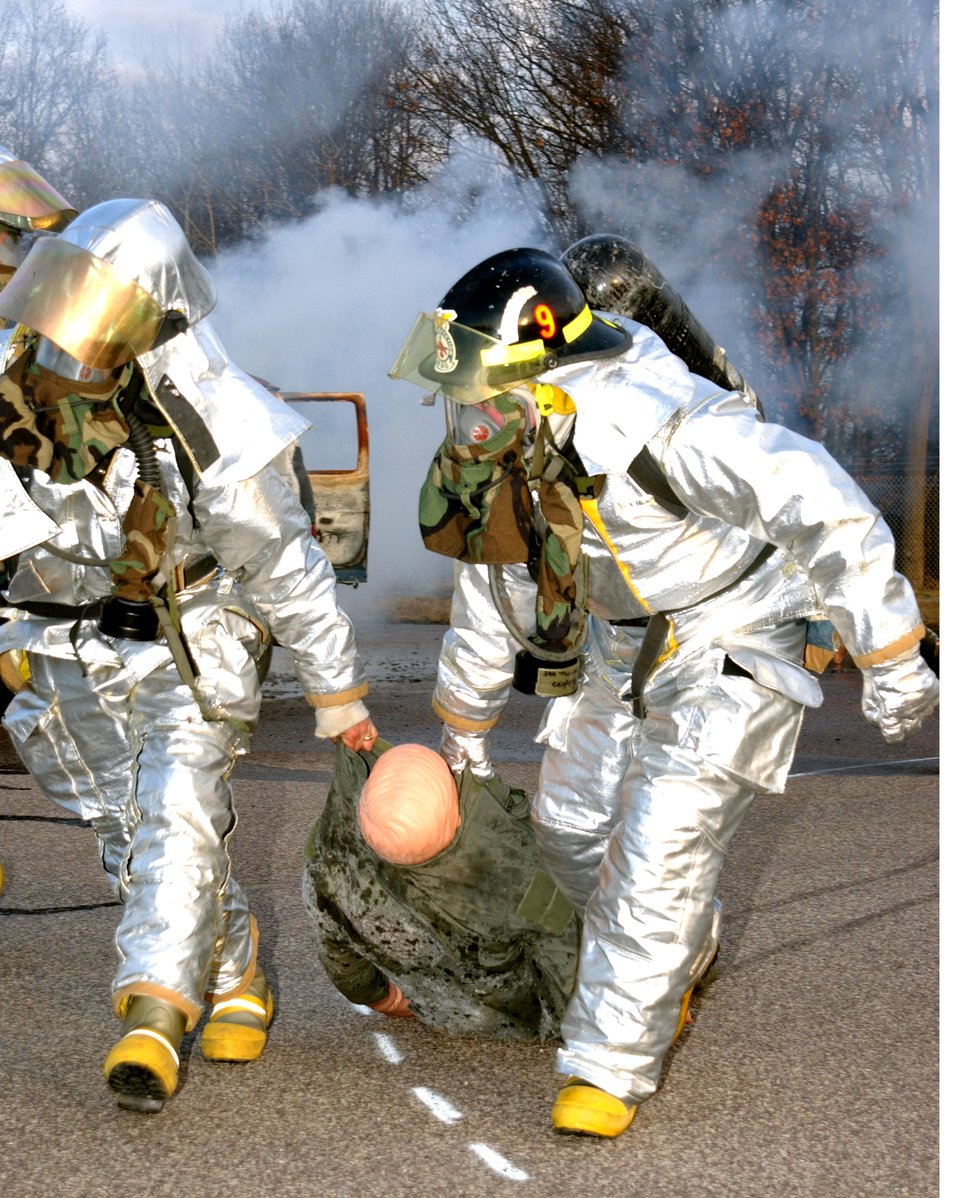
Readiness safeguard

VOLK FIELD AIR NATIONAL GUARD BASE, Wis. -- Firefighters from the Wisconsin Air National Guard's 128th Air Refueling Wing move a victim (represented by a crash test dummy) from a simulated C-130 Hercules crash site during a fire control exercise here recently.